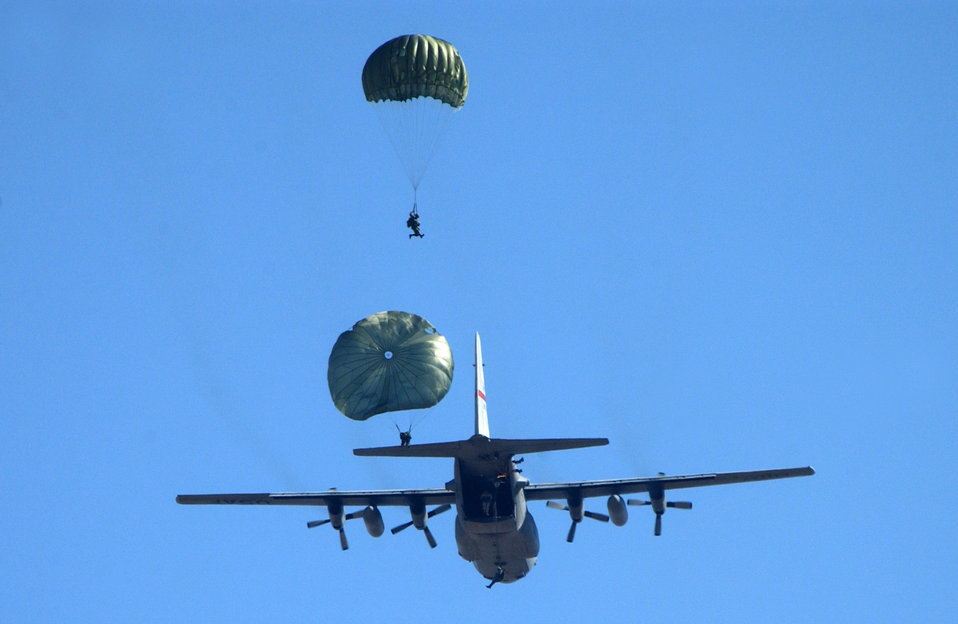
Global mobility aircraft saving lives in Iraq

Parajumpers execute a low-level jump out of the back of a C-130 Hercules. During the Air Force Association's 2006 Air and Space Conference and Technology Exposition in Washington, D.C., Sept. 26, Gen. Duncan J. McNabb, Air Mobility Command commander, said the C-130 missions are being expanded.